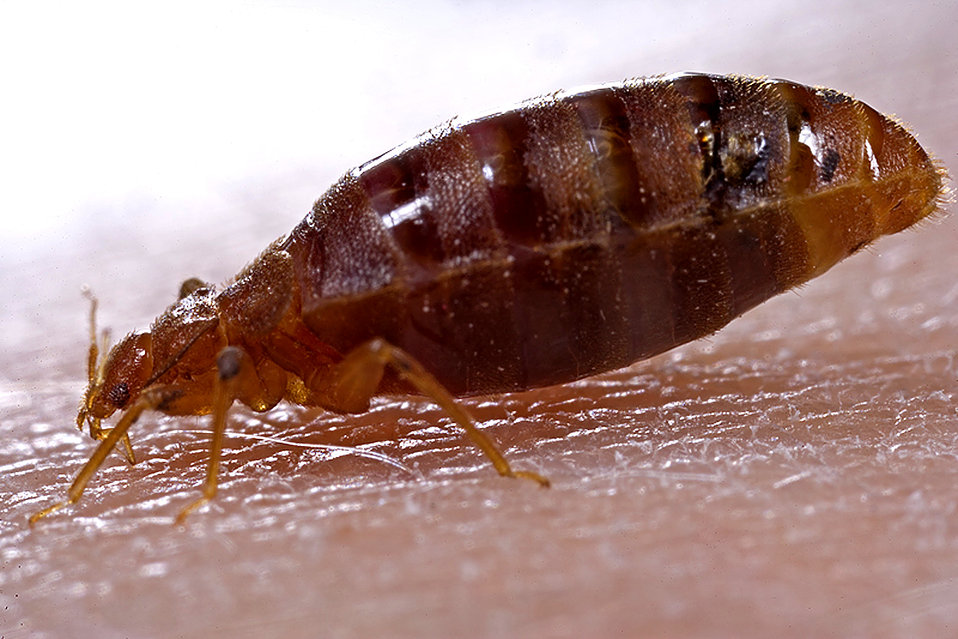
This 2006 photograph depicted a lateral view of an adult bedbug, Cimex lectularius, as it was in the process of ingesting a blood meal from the arm of a 'voluntary' human host.Bedbugs are not vectors in nature of any known human disease. Although some disease organisms have been recovered from bedbugs under laboratory conditions, none have been shown to be transmitted by bedbugs outside of the laboratory. Bedbug bites are difficult to diagnose due to the variability in bite response between people, and due to the change in skin reaction for the same person over time. It is best to collect and identify bedbugs to confirm bites. Bedbugs are responsible for loss of sleep, discomfort, disfiguring from numerous bites and occasionally bites may become infected.